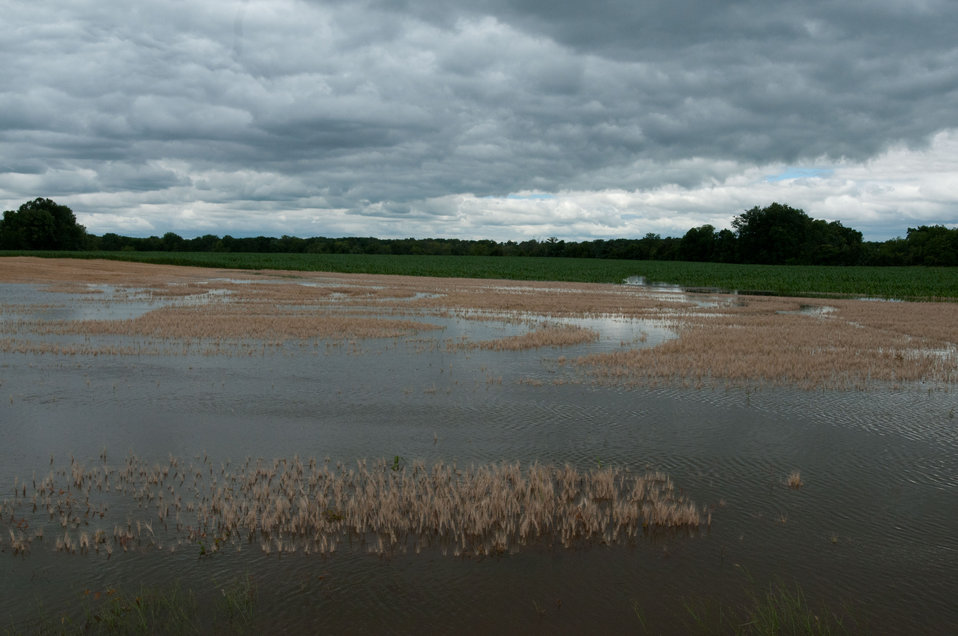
To save crops that were threatened by Mississippi River floodwaters farmers harvested wheat two weeks early from the Yazoo River area near Yazoo City, MS on Monday, May 16. 2011. The lines are from combines and the wide tires.